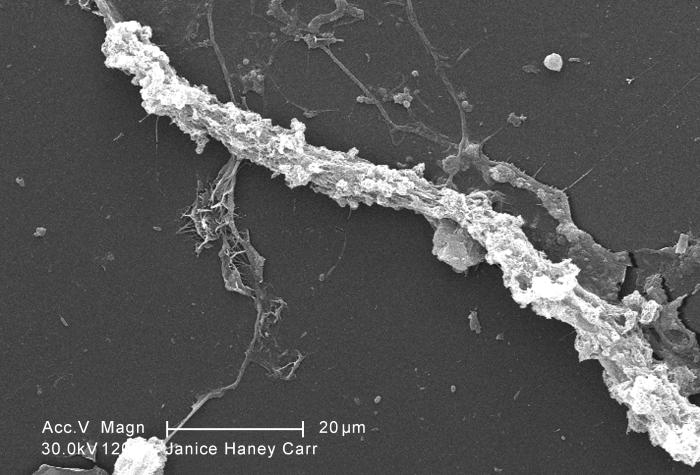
Magnified 1200X, this scanning electron micrograph (SEM) of an untreated water specimen extracted from a wild stream mainly used to control flooding during inclement weather, revealed the presence of unidentified organisms, which included bacteria, protozoa, and algae. In this particular image, an unidentified amorphous strand of mucoidal biofilm was featured, which appeared to have enmeshed numbers of amoeboid organisms.